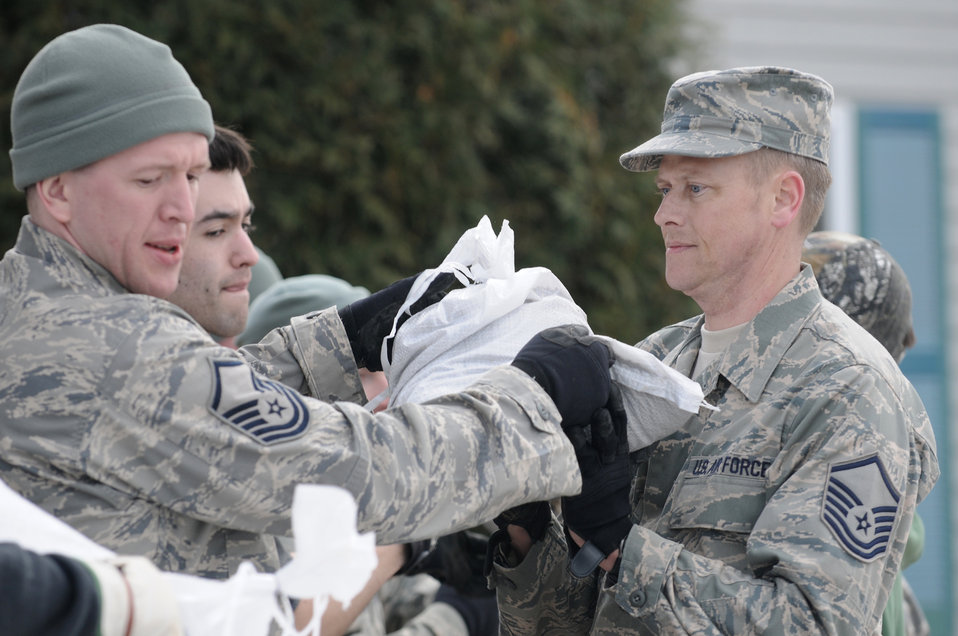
More on the way

Master Sgt. David Larson (right) catches a sandbag from Master Sgt. Kyle Kemmet as they participate in a human chain March 16, 2010, in the River Vili area of Fargo, N.D. They are building a flood barrier to the rising water of the Red River in the backyard of homes. Both Airmen are assigned to the North Dakota Air National Guard's 119th Logistics Readiness Squadron.